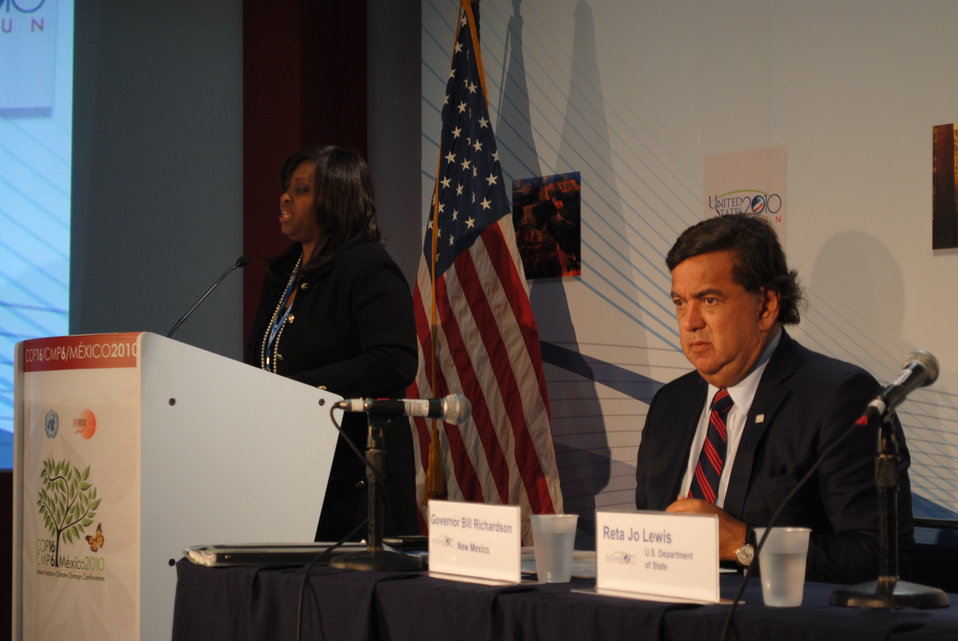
Special Representative Lewis Highlights Collaboration Among State Governments

U.S. Department of State Special Representative Reta Jo Lewis highlights collaboration among state governments at the U.S. Center at COP-16 in Cancun, Mexico, on December 6, 2010. New Mexico Governor Bill Richardson is sitting to the right of Special Representative Lewis.